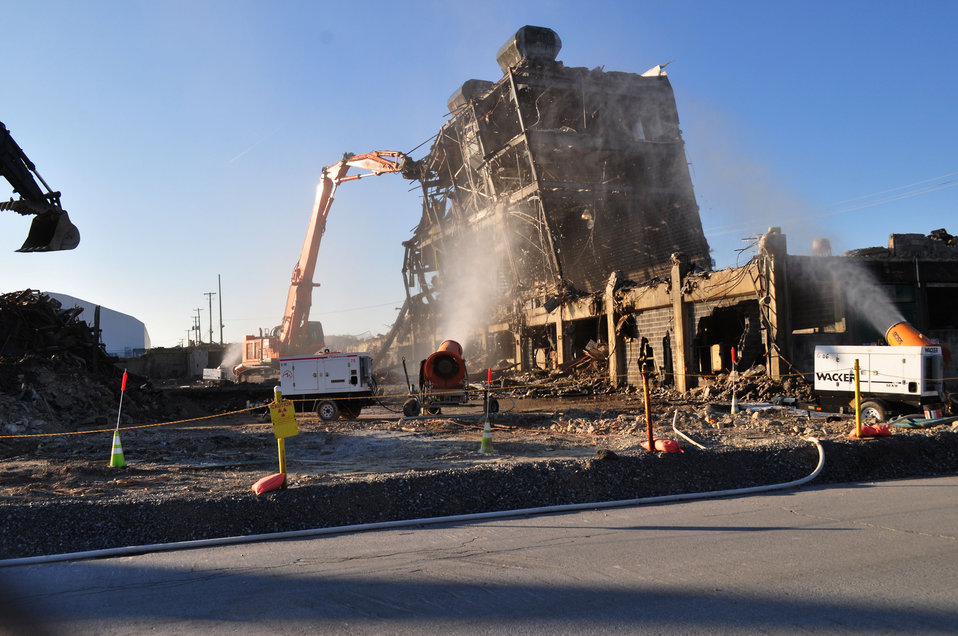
3

K-25 North Tower